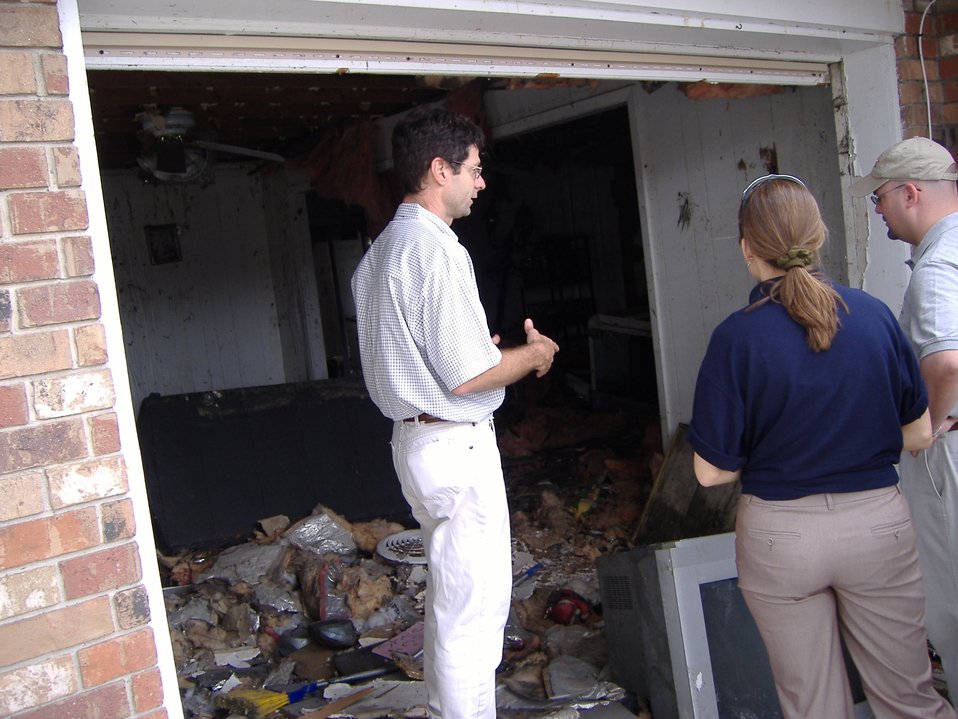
Discussing recovery plan after Hurricane Katrina